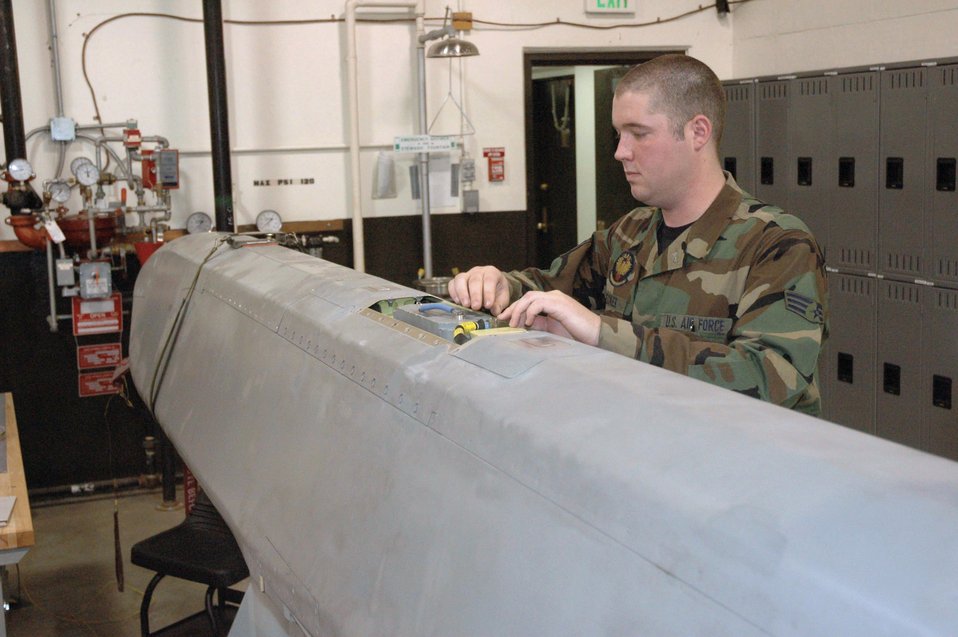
Airmen maintain national defense inside weapons storage area

MINOT AIR FORCE BASE, N.D. -- Senior Airman Justin Decker examines an air-to-ground missile in the weapons storage area here. The B-52 Stratofortress can hold up to 20 of these missiles. He is a missile and space systems electronic maintainer with the 5th Munitions Squadron.